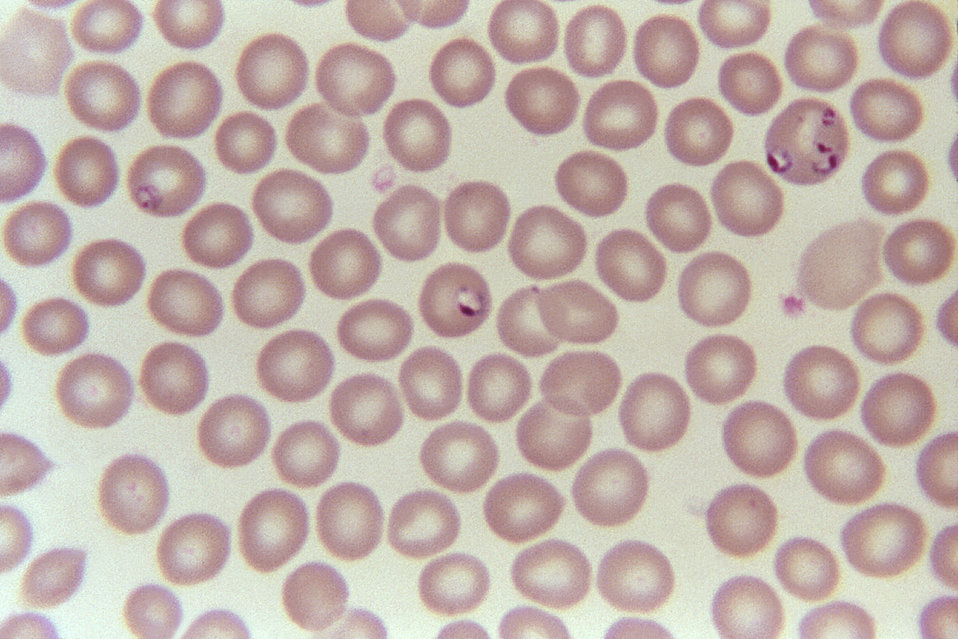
Blood smear showing large Babesia rings in erythrocytes.